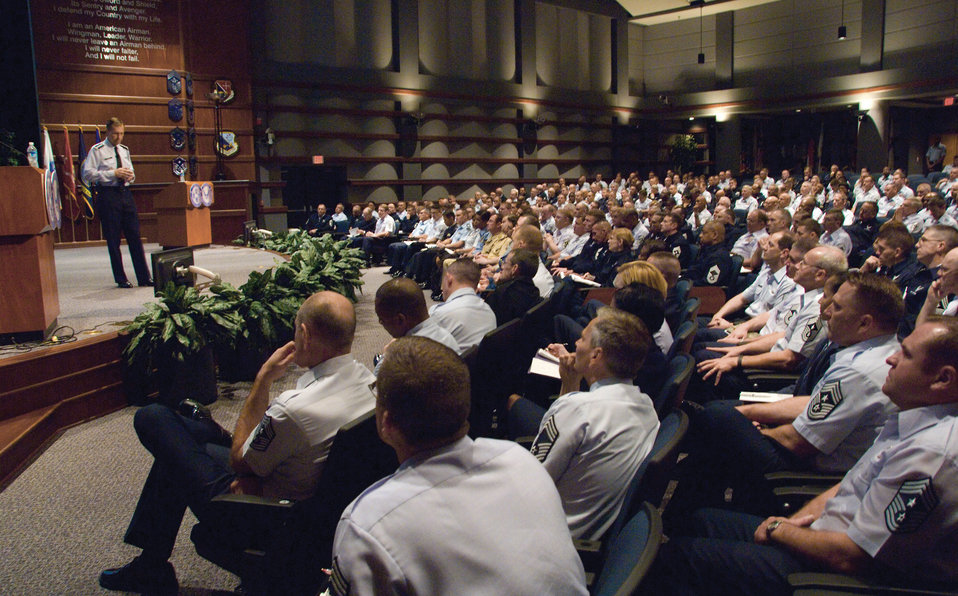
2009 Senior Enlisted Leader Summit held at Gunter

Air Force Vice Chief of Staff Gen. William M. Fraser III addresses attendees of the Senior Enlisted Leader Summit May 6 at the Senior NCO Academy auditorium at Maxwell Air Force Base's Gunter Annex, Ala.